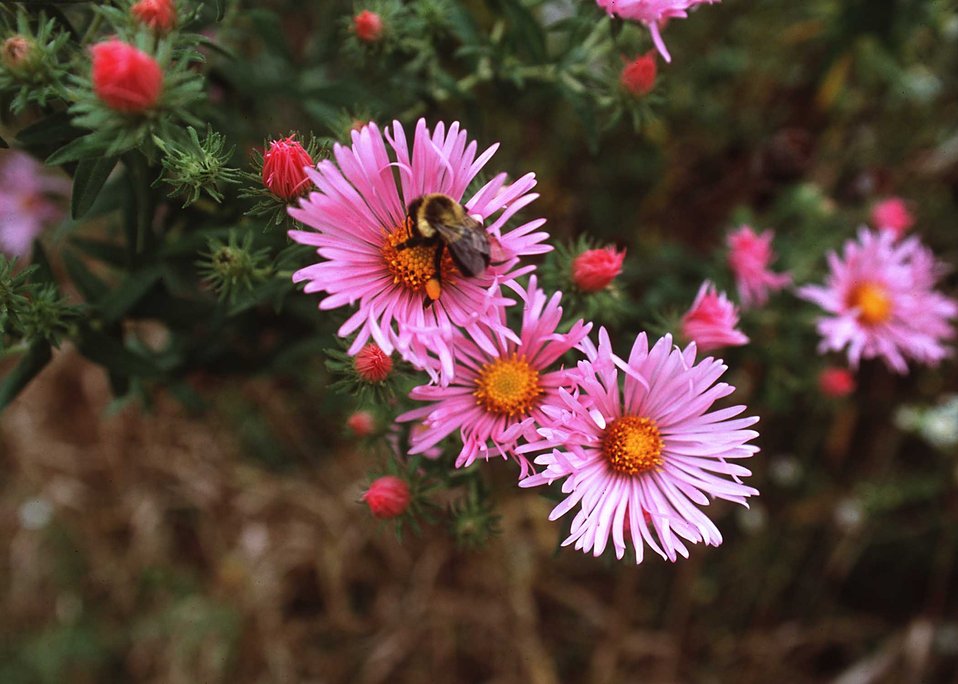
Native forbs in Linn County, Iowa, are pollinated by bees.